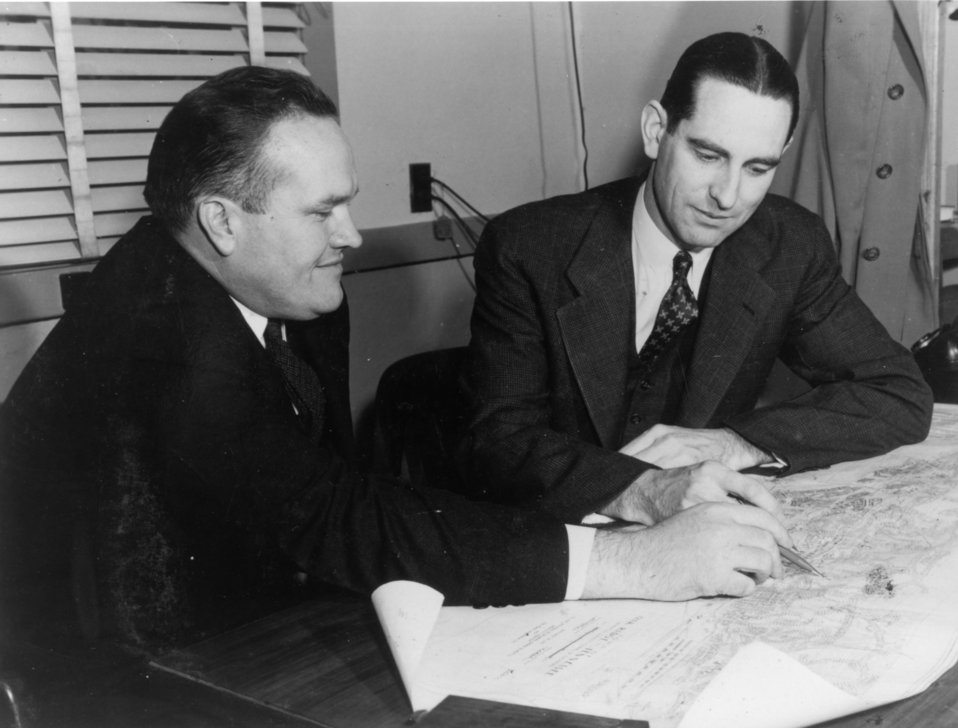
Schools at Oak Ridge